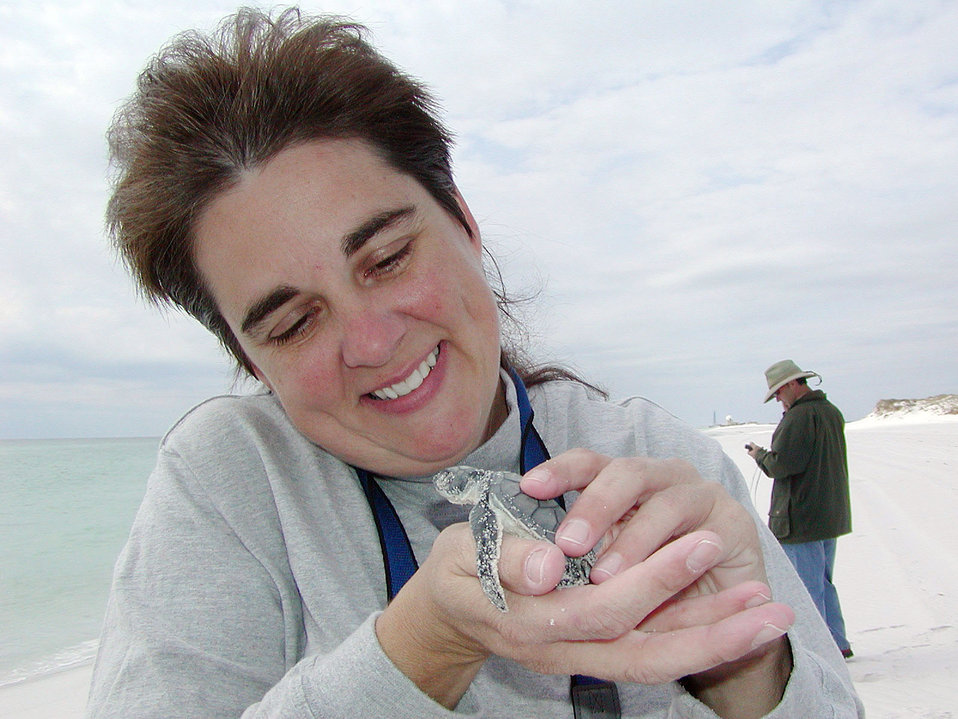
Turtle patrol

EGLIN AIR FORCE BASE, Fla. (AFPN) -- Pam Yates, turtle patrol volunteer, gives good-bye wishes to one of her